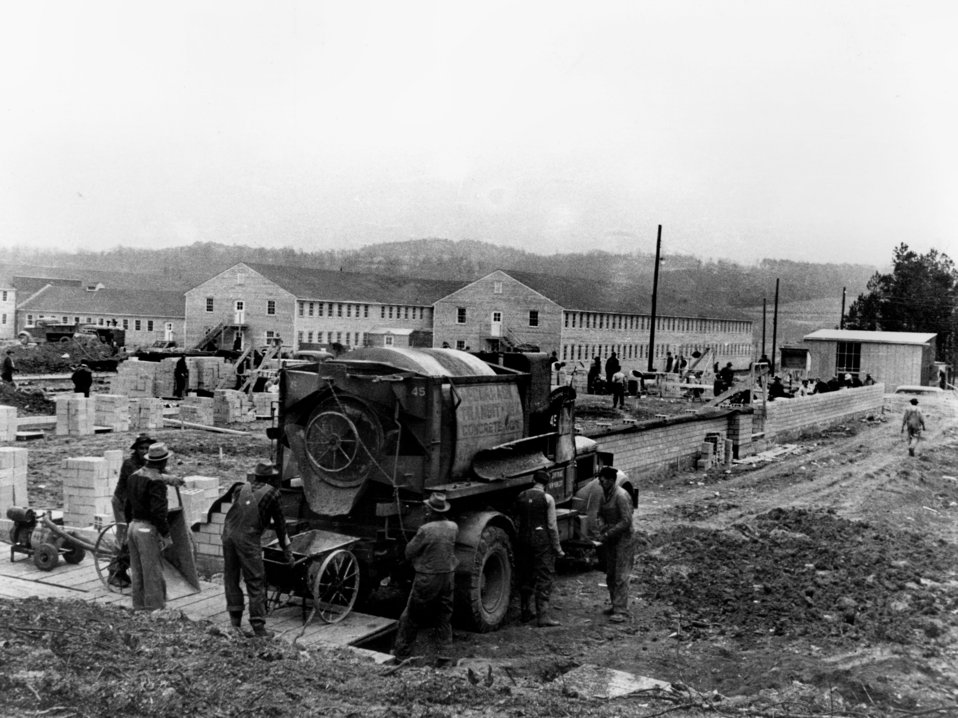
Early Construction of ACE Bldgs Oak Ridge

8-5 roll DOE photo by Ed Westcott 2-26-43
Oak Ridge Tennessee